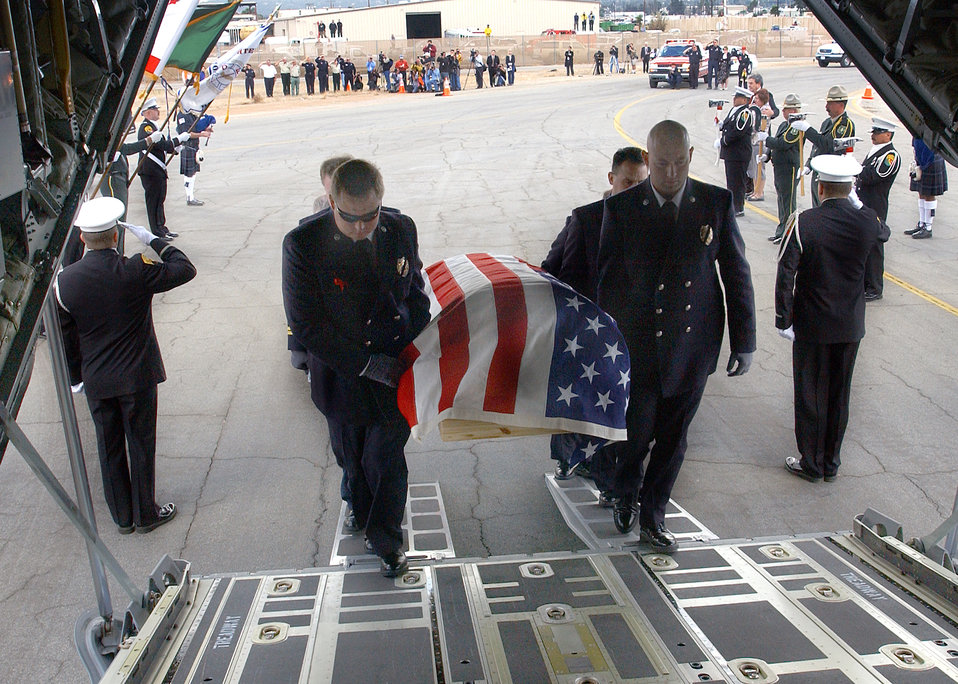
Hero honored

GILLESPIE FIELD AIRPORT, Calif. -- Novato firefighters Shawn Kreps (left) and Barrett Smith lead pallbearers carrying the casket of firefighter Steven Rucker into the cargo area of an Air Force C-130 Hercules here. Rucker, an engineer with the Novato Fire Protection District, died Oct. 29 in San Diego County's Cedar fire. Kreps, Smith and Capt. Doug McDonald survived the fire that claimed Rucker's life.